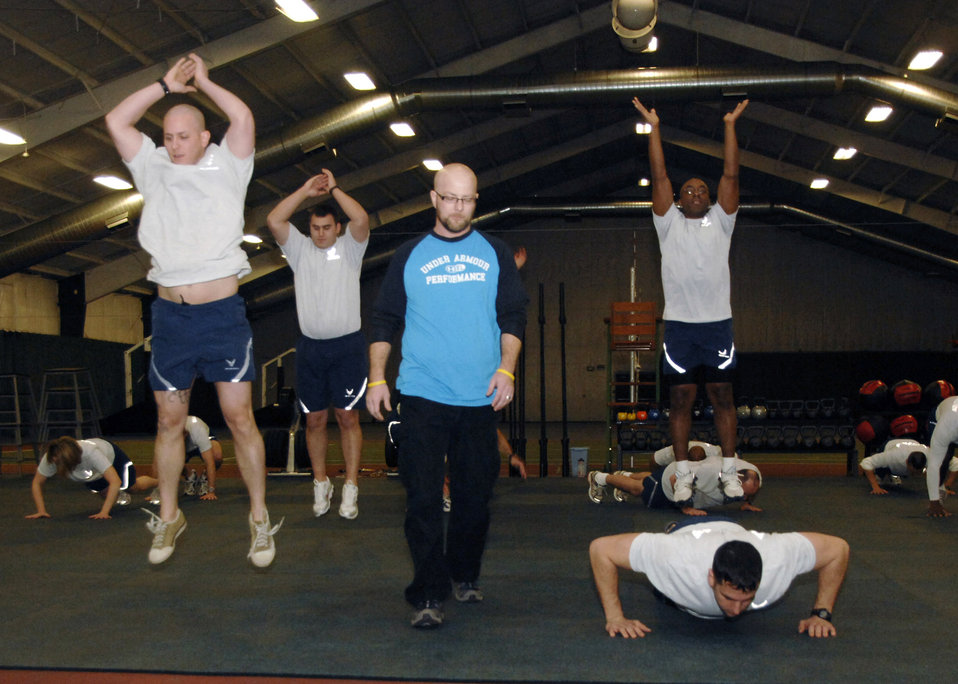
Andrews officials launch tactical fitness center

Airmen give their best during the inaugural exercise session Jan. 15 at the new Tactical Fitness Center at Andrews Air Force Base, Md. Staff members at the center focus on programs that build the core strength and endurance that are fundamental to a superior level of combat fitness, both as individuals and as team members.